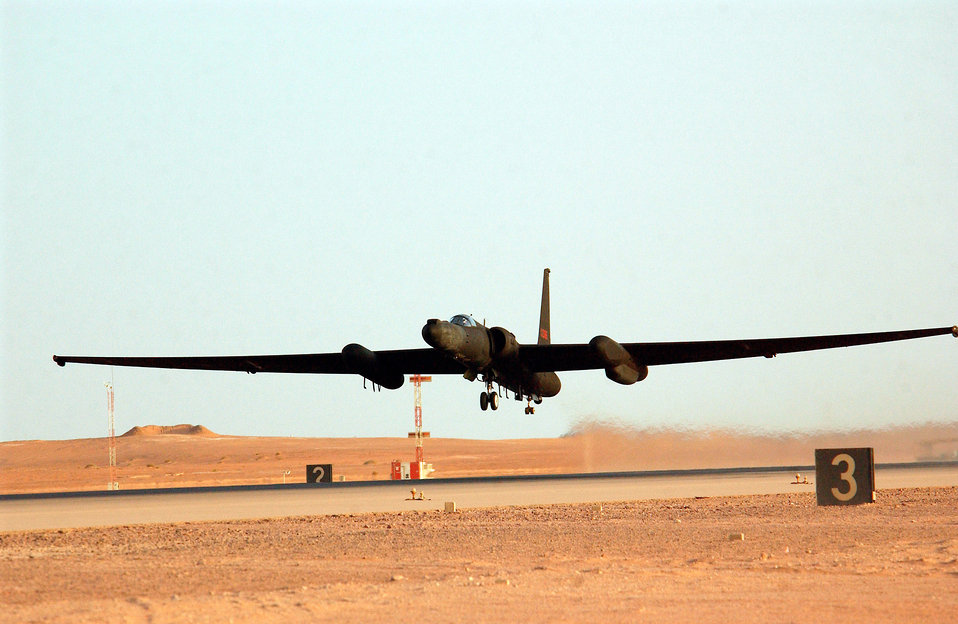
Dragon Lady takes flight

OPERATION IRAQI FREEDOM -- Lt. Col. Walter Flint, a deployed U-2 Dragon Lady commander from the 99th Reconnaissance Squadron, Beale Air Force Base, Calif., to the 363rd Expeditionary Reconnaissance Squadron, takes off for a mission on April 11, 2003. The U-2 is a high altitude-multi intelligence reconnaissance aircraft. It can fly above 70,000 ft and provides near-real-time imagery and signals intelligence to war fighters and national authorities in support of Operation Iraqi Freedom at a forward deployed location in Southwest Asia.